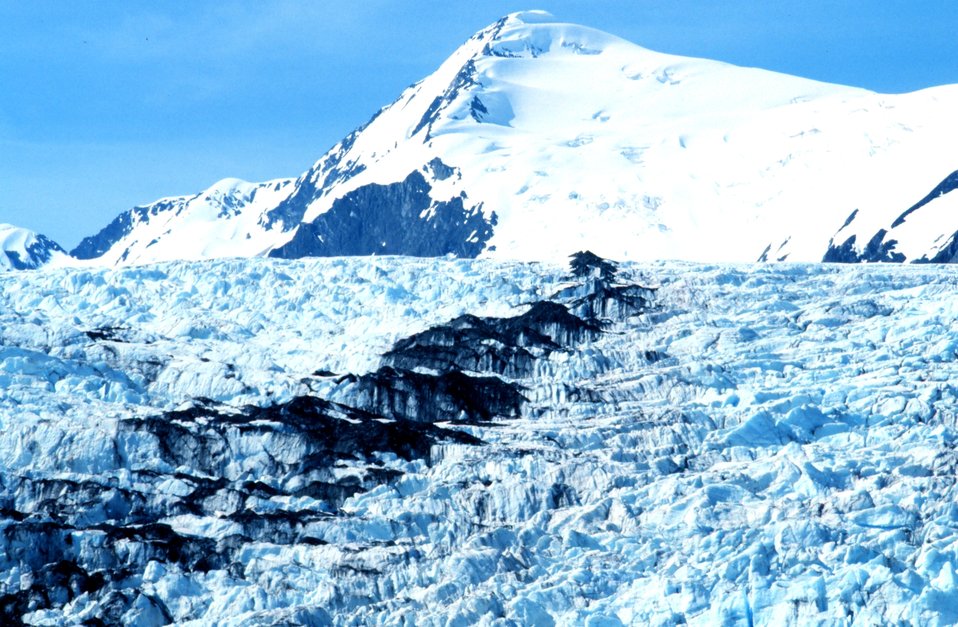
Glacier in Kenai Fjords